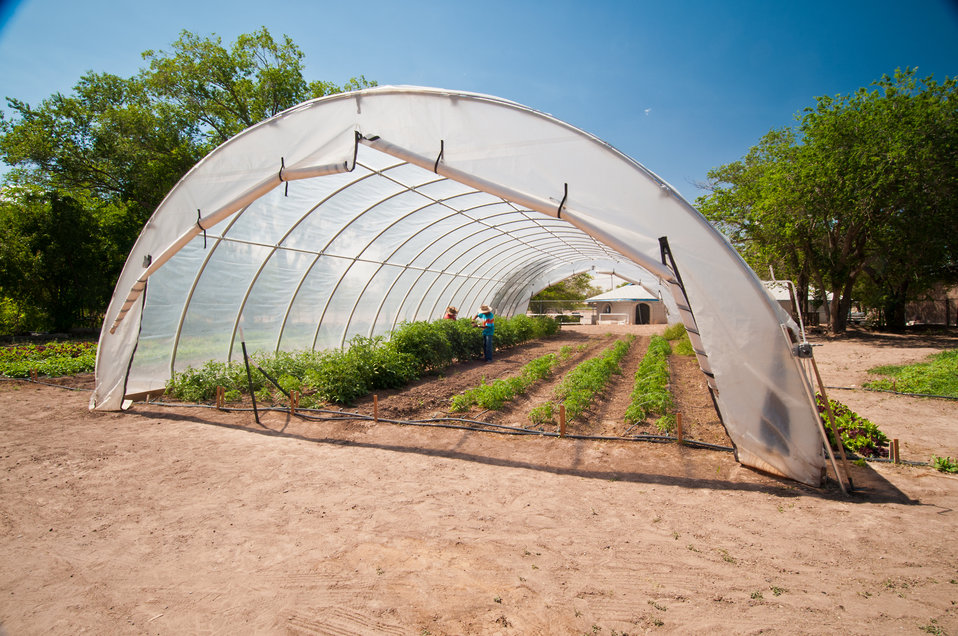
Silverio Sevilla and Fidel Gonzales tend to tomatoes and peppers grown by Los Jardines Institute Farm, Albuquerque, NM on Monday, Jun. 10, 2013. Los Jardines Institute Farm a local sustainable farm was able to construct a high tunnel house with a loan from the La Montanita Co-op. La Montanita Co-op offers loans to local farmers and food producers for development. La Montanita Co-op is a 17,000 member socially responsible, locally owned food cooperative that supports a stable market for local farmers and producers of sustainable and organic regional/local agriculture in Albuquerque, New Mexico. The co-op has a distribution center and two stores in Albuquerque; Valley and Nob Hill and stores in Santa Fe and Gallup, NM.